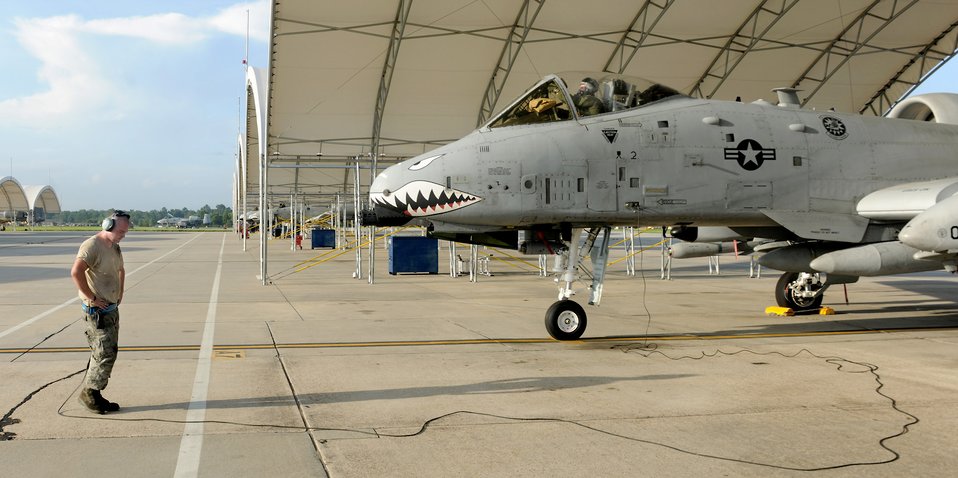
Enhanced Mojave Viper Exercise

Staff Sgt. Sean Carroll communicates with Capt. Brendhan Goss through a headset as they both go over the final details of the preflight check list before takeoff Aug. 13, 2010, at Moody Air Force Base, Ga. Sergeant Carroll is a crew chief with the 74th Aircraft Maintenance Unit and Captain Goss is an A-10C Thunderbolt II pilot instructor with the 74th Fighter Squadron.